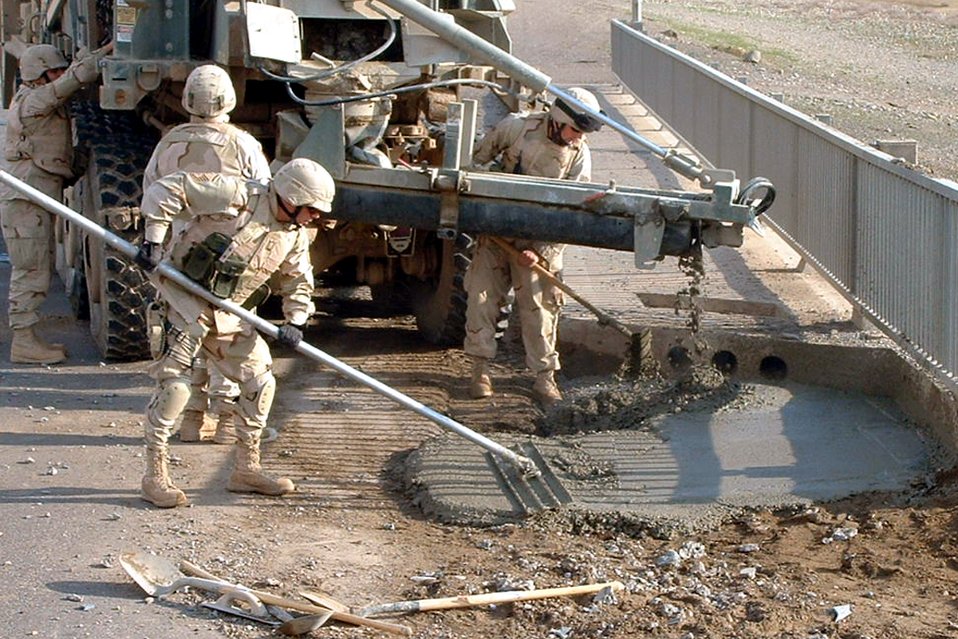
Combat Airmen keep convoy routes open

Airmen fill in a crater caused by an improvised explosive device on Monday, July 17, in Iraq. Members of the 732nd Expeditionary Civil Engineer Squadron's Detachment 10 are frequently called upon to repair damage to convoy routes caused by IEDs.